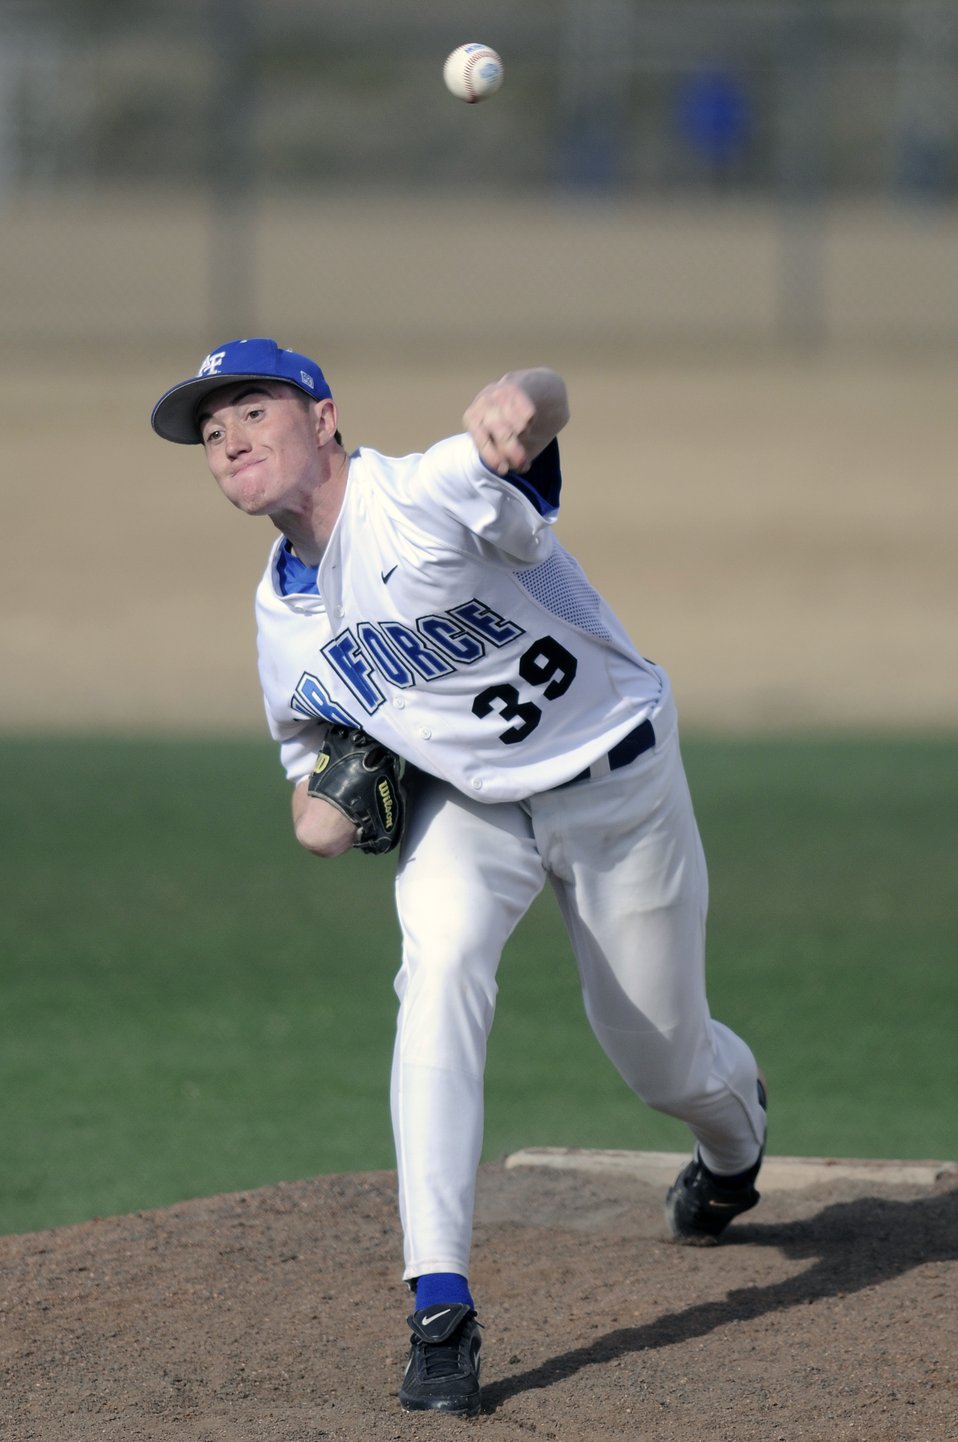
US Air Force Academy, CO

Freshman relief pitcher Andrew Loyd faces a batter during the 11-7 win against Colorado Christian at Falcon Field March 17. The win improved the Falcons record to 6-9 on the season. Air Force returns to action with a three-game series at UNLV starting Friday, March 20.